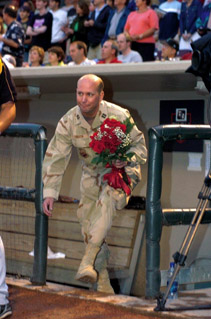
Deployed member, family enjoy surprise reunion

Having kept his return from a Middle East deployment under wraps, Capt. Jim Thigpen makes his way toward his unsuspecting family during the Dayton Dragons game at Fifth Third Field in Dayton, Ohio. The captain is a member of Aeronautical Systems Center's 726th Aeronautical Systems Group at Wright-Patterson Air Force Base, Ohio, which manages the B-2 Spirit.